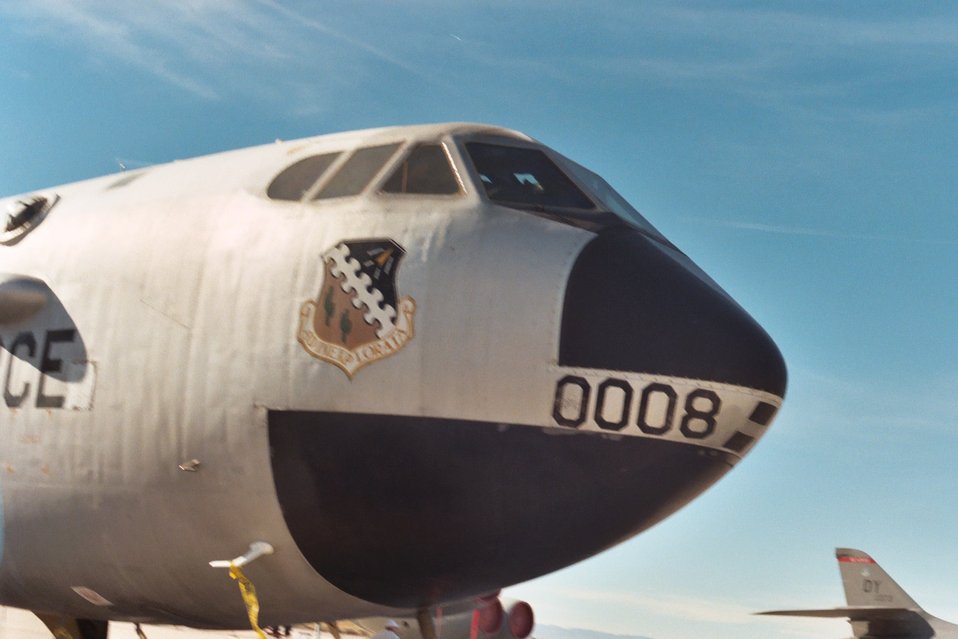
Personal photograph taken by LanceBarber at Edwards AFB Summer Airshow, 2003. No copyrights. Free to the public, release to public domain, and fair use.